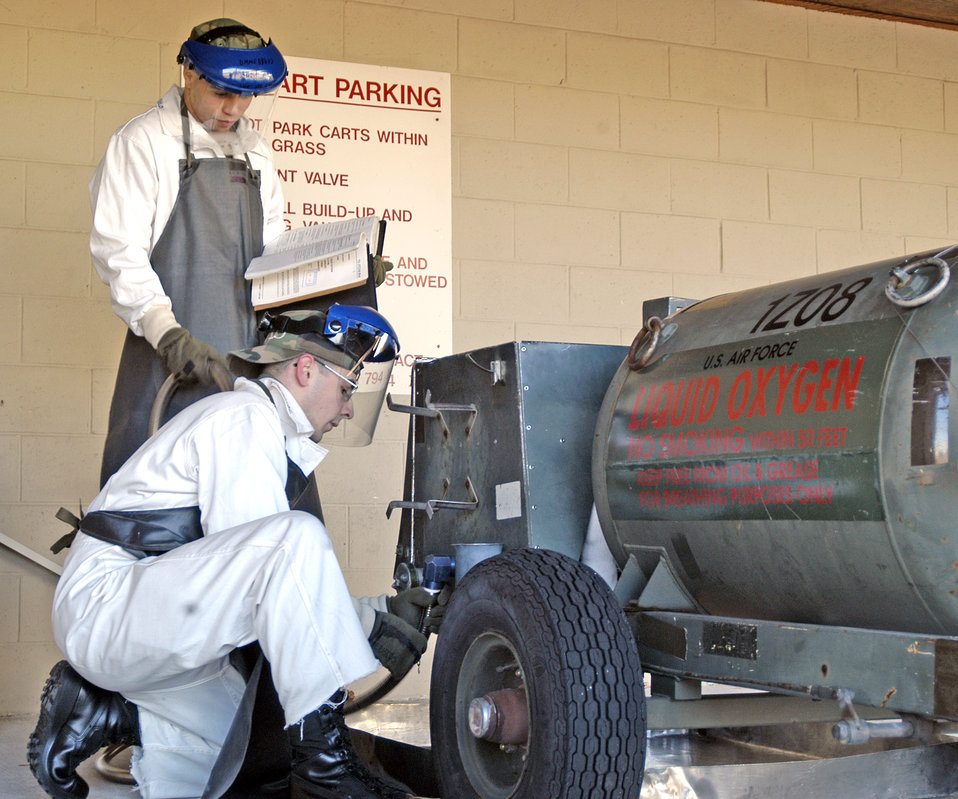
Smart Operations 21

DOVER AIR FORCE BASE, Del. -- Senior Airmen Timothy Cousins and Matthew Ferretti perform routine maintenance on a liquid oxygen cart. This process, the result of an Air Force Smart Operations 21 initiative, cut service time on the cart down from three days to 30 minutes. The Airmen are electrical environmental systems journeymen assigned to the 436th Maintenance Squadron.